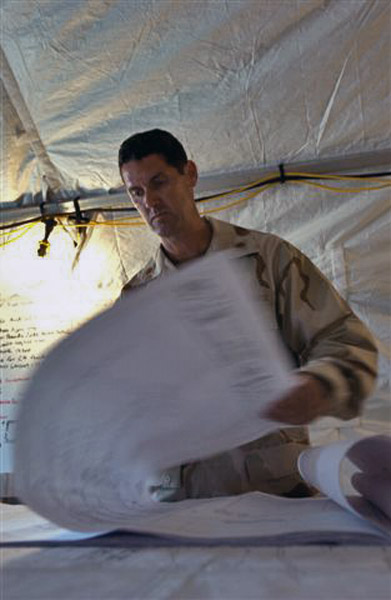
Prime BEEF stamps hoof prints on Gitmo

Maj. Chad Warren, 474th Expeditionary Civil Engineer Squadron, examines the plans Sept. 18 for the new expeditionary legal complex where military commissions will resume pending court review. The complex is expected to be completed early in early 2008.